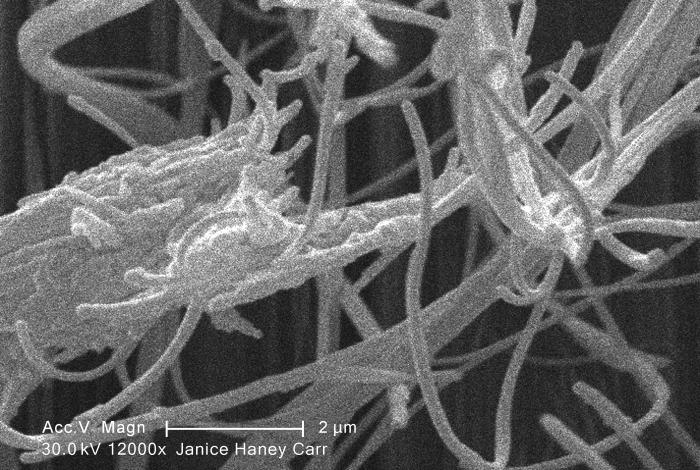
Under a very high magnification of 12000X, this scanning electron micrograph (SEM) revealed some of the microcrystalline ultrastructure exhibited by a piece of raw chrysotile, or white asbestos, which had been excavated from the Lowell Asbestos Mine on Belvidere Mountain, Vermont.